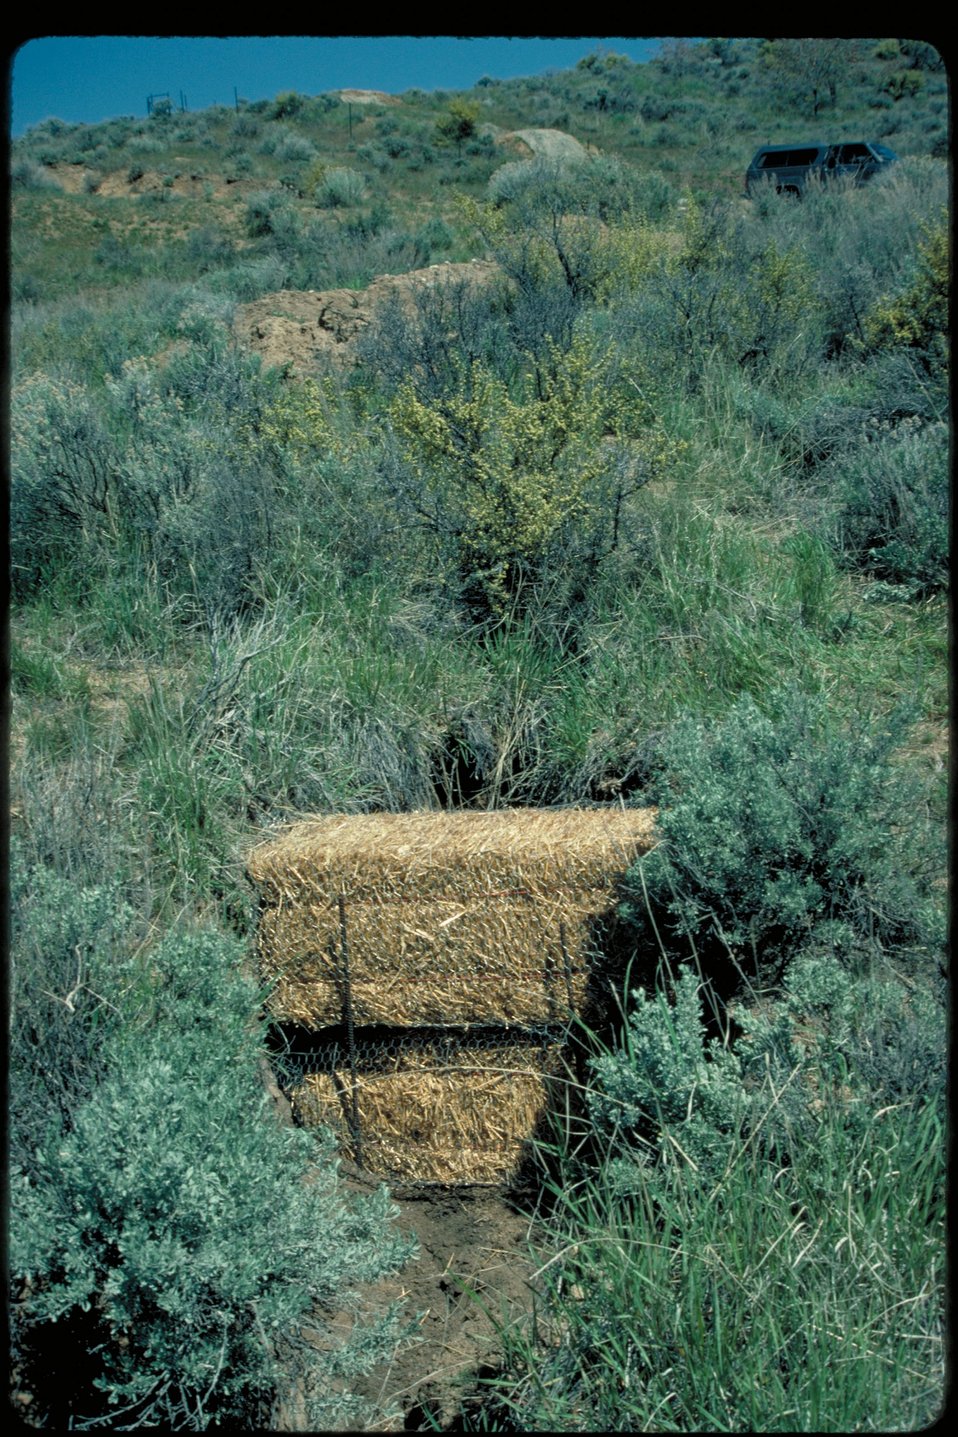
Bail of Hay Boise Front Four Rivers Field Office LSRD Lower Snake River District